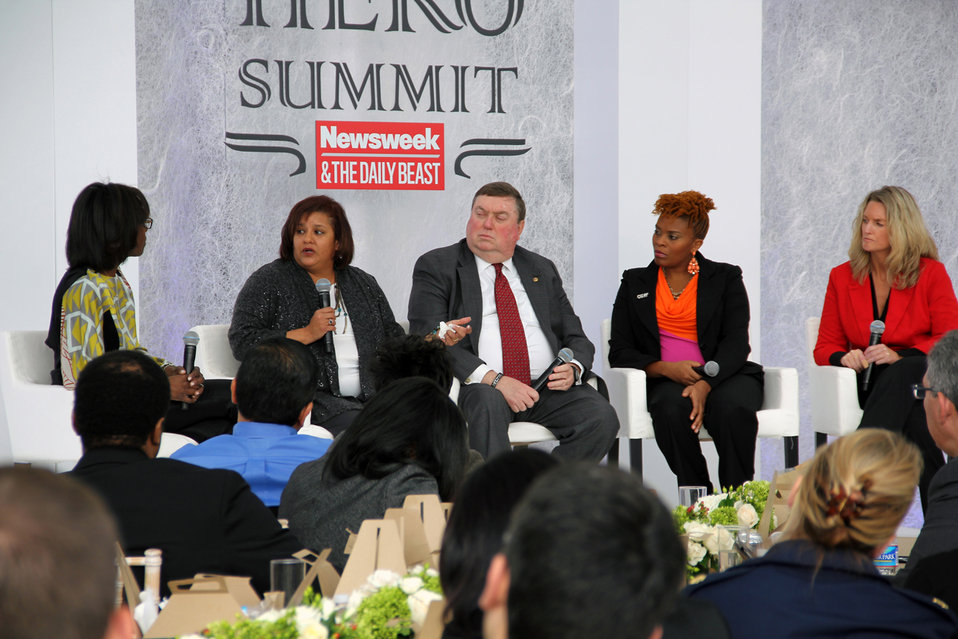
Hero Summit Panel

Patti Walker, left, wife of retired Army 1st Sgt. Kevin Walker and Wounded Warrior Program advocate on Fort Riley, Kan., talks to ABC News correspondent Deborah Roberts during a Hero Summit panel titled, “The Other Side of Sacrifice: Military Families” in Washington, D.C., Nov. 15, 2012. Other panel members included, from left to right, Bill Norwood, father of Marine Corps Sgt. Byron Norwood, who was killed in action; retired Air Force Maj. Lori Bell, wife of an active-duty Airman and founder and president of the National Association of Military Moms and Spouses; Kim Ruocco, widow of Marine Corps Maj. John Ruocco and Tragedy Assistance Program for Survivors national director of postvention programs.